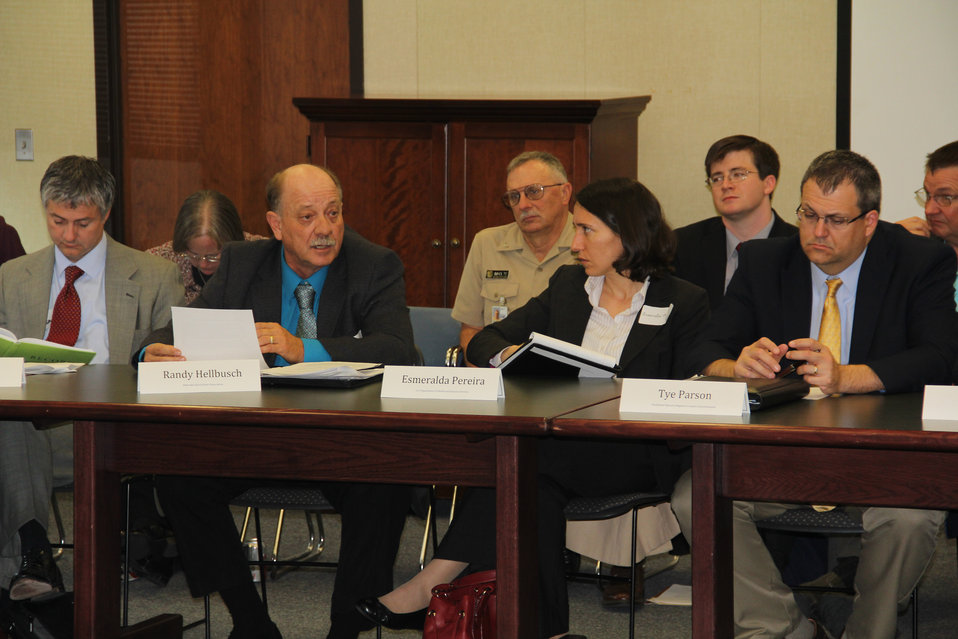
Nebraska Rural Water Association representative Randy Hellbusch discusses how rural communities with shallow wells are facing challenges due to inadequate water supplies and poor water quality at the Federal Drought Meeting in Omaha, NE on Tuesday, Oct. 9, 2012.